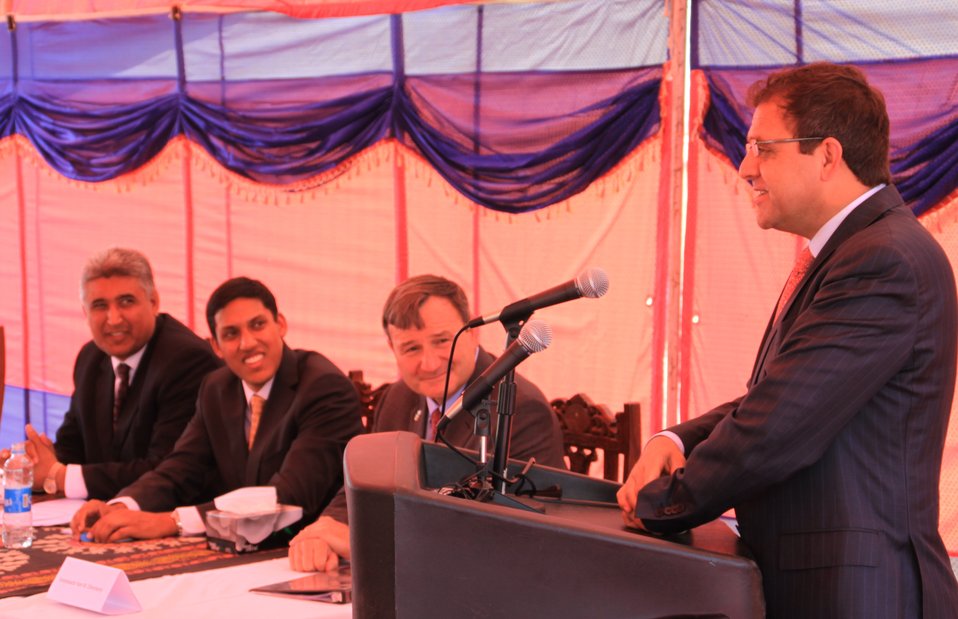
Badam Bagh Farm